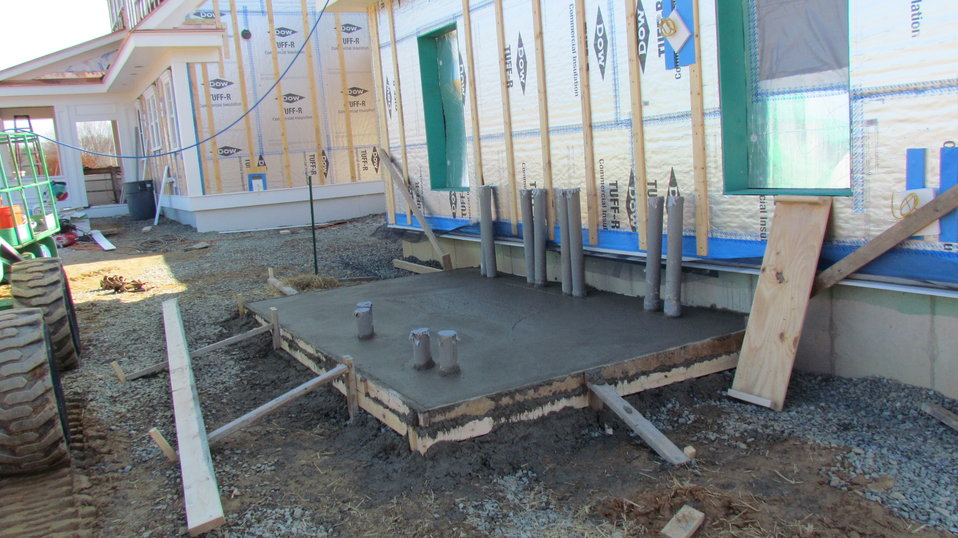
Pouring of concrete pad that will be used to place transformers/switchgear to convert 208 volt three-phase power to 240 volt single-phase power supplied to test facility.